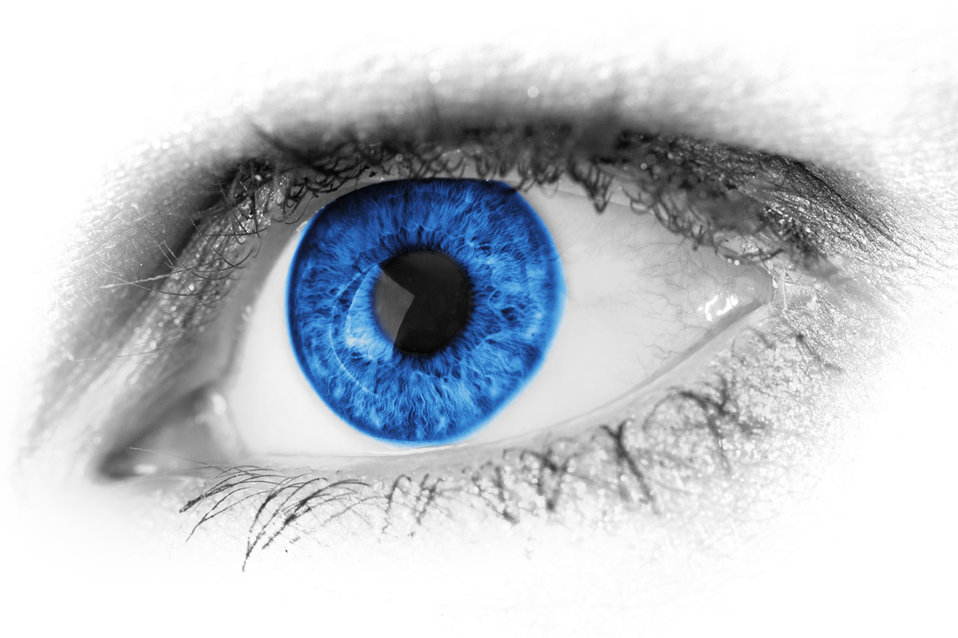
Blue eye detail

Macro photo in black and white with a blue eye.